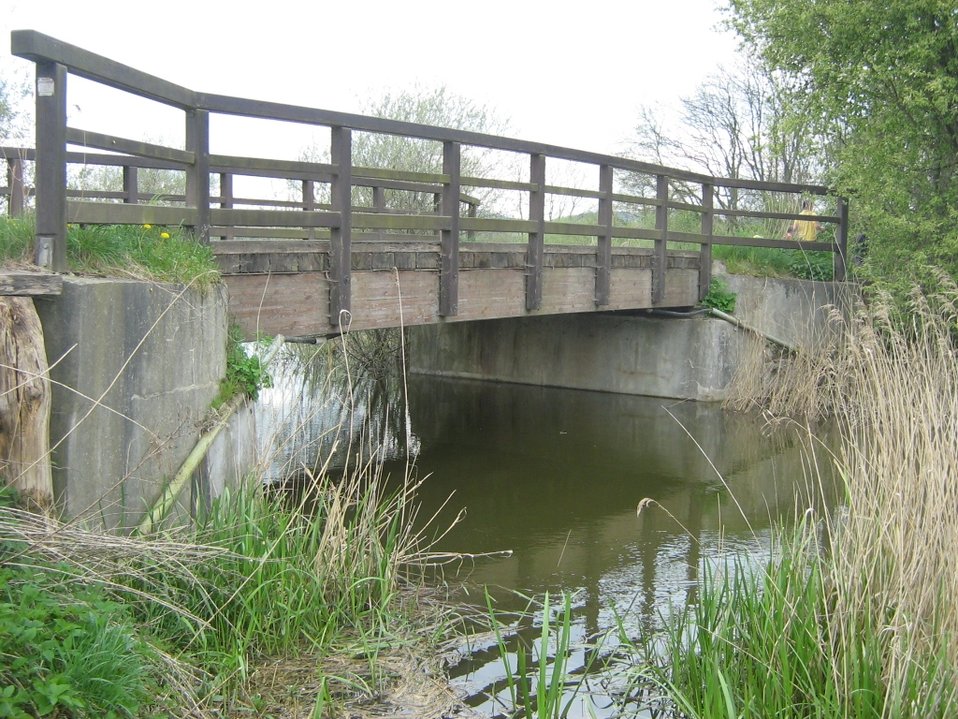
Deutsch: Der Dahmer Kanal entwässert den Malchiner See zur Ostpeene bei Malchin. Er fließt in einem breiten Stromtal zwischen den Bergen der Mecklenburger Schweiz und ist der kanalisierte Verlauf eines Flusses des Peenesystems (einer der kleinen Zuflüsse des Malchiner Sees heißt „Westpeene“). Der Dahmer Kanal ist für Boote schiffbar.